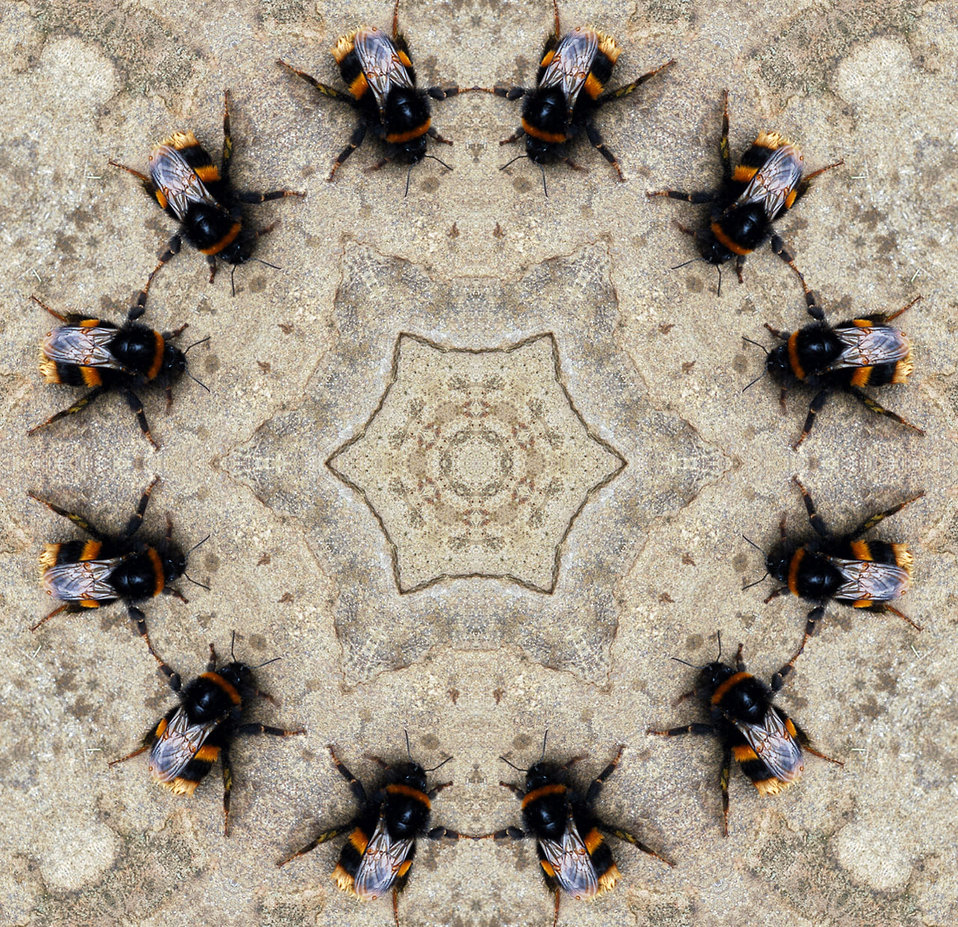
Bumblebees dancing

Bumblebees on a beige background - kaleidoscope effect.